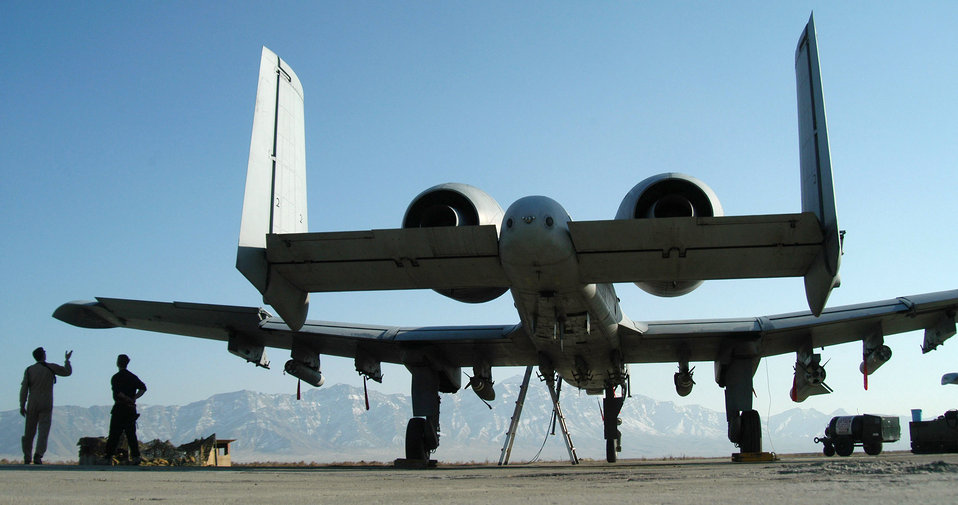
Hog heaven

OPERATION ENDURING FREEDOM -- Lt. Col. Dan of the 104th Fighter Squadron explains the capabilities of an A-10 Thunderbolt II to Tech. Sgt. Donald Richardson, a heating and ventilation technician with the 682nd Air Support Operations Squadron at Bagram Air Base, Afghanistan. The A-10 pilots conduct